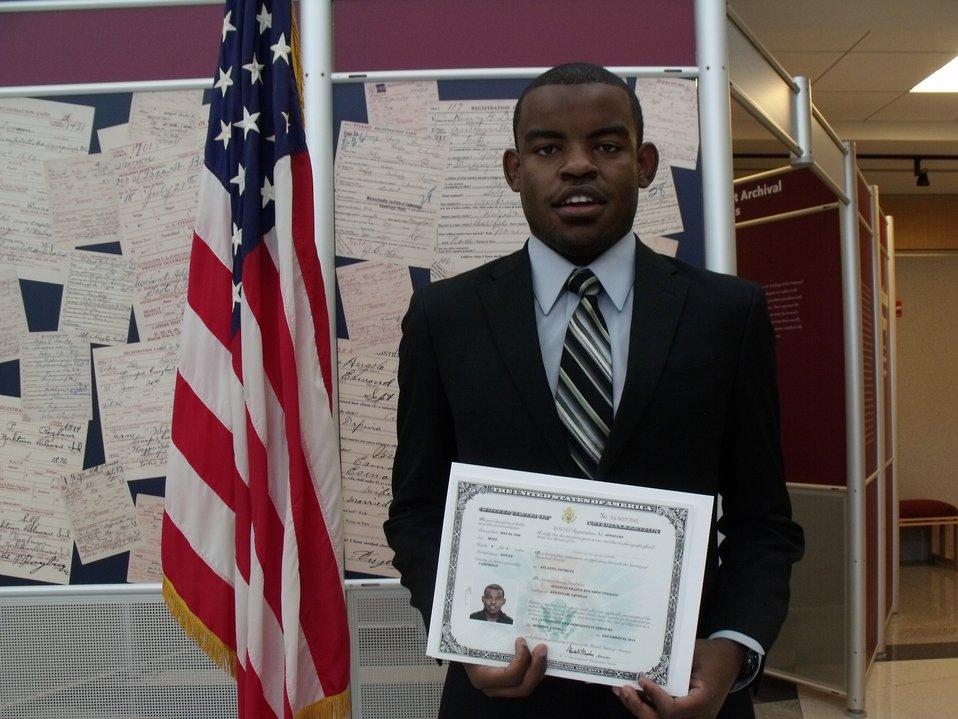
New Citizens